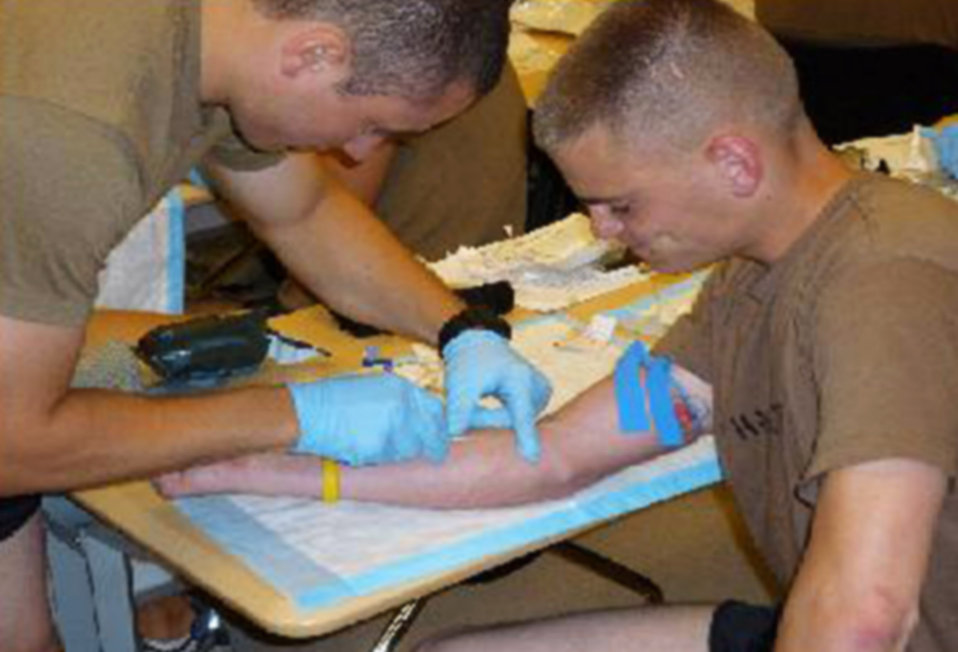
Special operations unit opens professional developement course for ROTC cadets

Norwich University ROTC Cadet Ian Kemp practices giving an IV to fellow Cadet Justin Hazlett as part of the special operations orientation program Sept. 23, 2009, at Hurlburt Field, Fla. During the program, cadets received classroom and hands-on instruction on how to perform and connect IVs. Cadets Kemp and Hazlett are assigned to Air Force ROTC Det. 867.